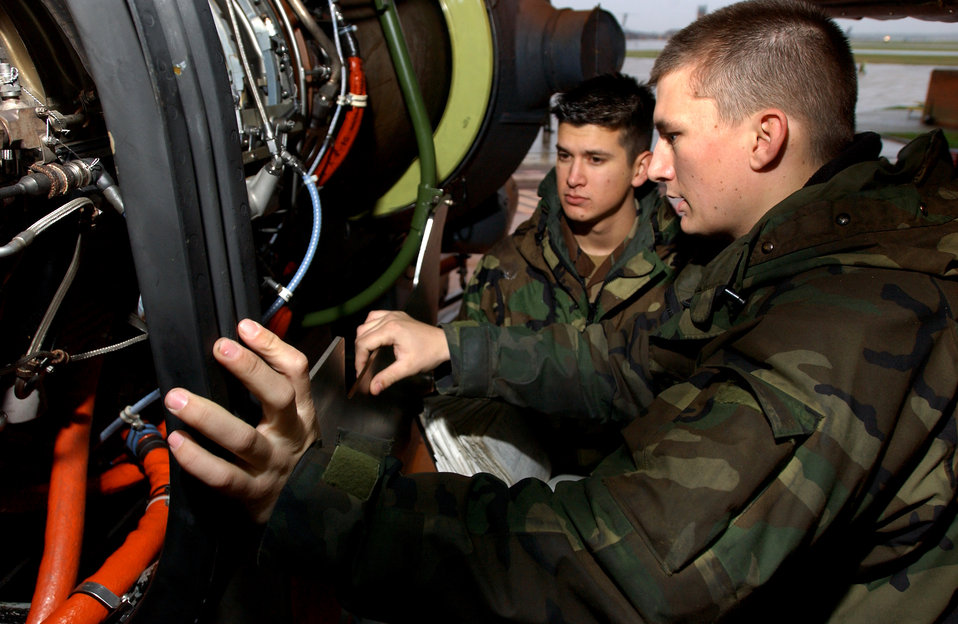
Helicopter inspection

ROYAL AIR FORCE MILDENHALL, England -- Staff Sgt. Michael Ruhstorfer (right) and Airman 1st Class Jeremy Maples inspect the safety wire installation during the replacement of an engine temperature sensor for an MH-53M Pave Low IV helicopter here recently. Both Airmen are assigned to the 352nd Maintenance Squadron.